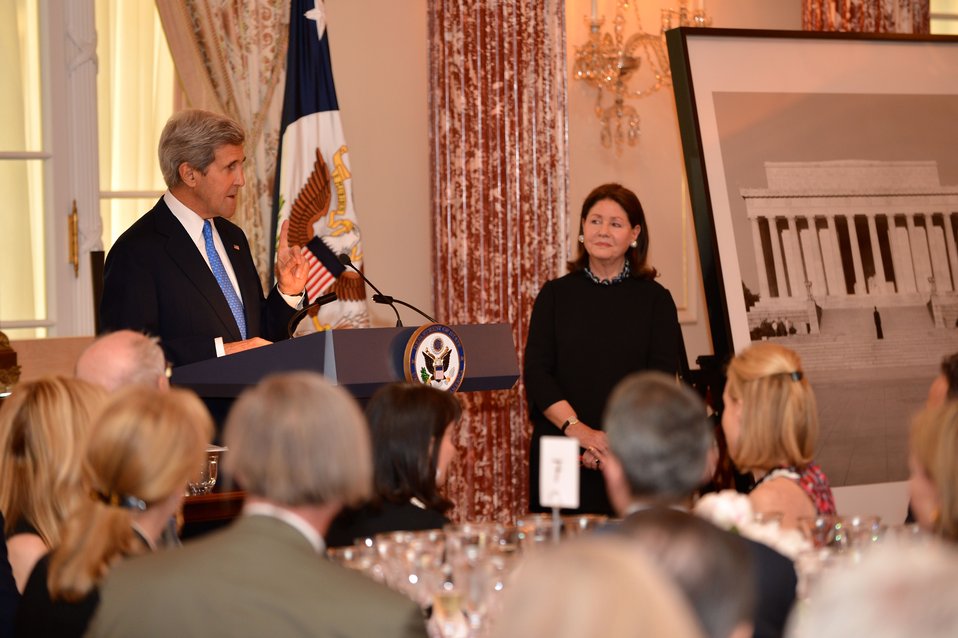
Secretary Kerry Delivers Remarks at the Foundation for Art and Preservation in Embassies Dinner

U.S. Secretary of State John Kerry delivers remarks at the Foundation for Art and Preservation in Embassies (FAPE) Dinner at the U.S. Department of State in Washington, D.C., on May 7, 2014.